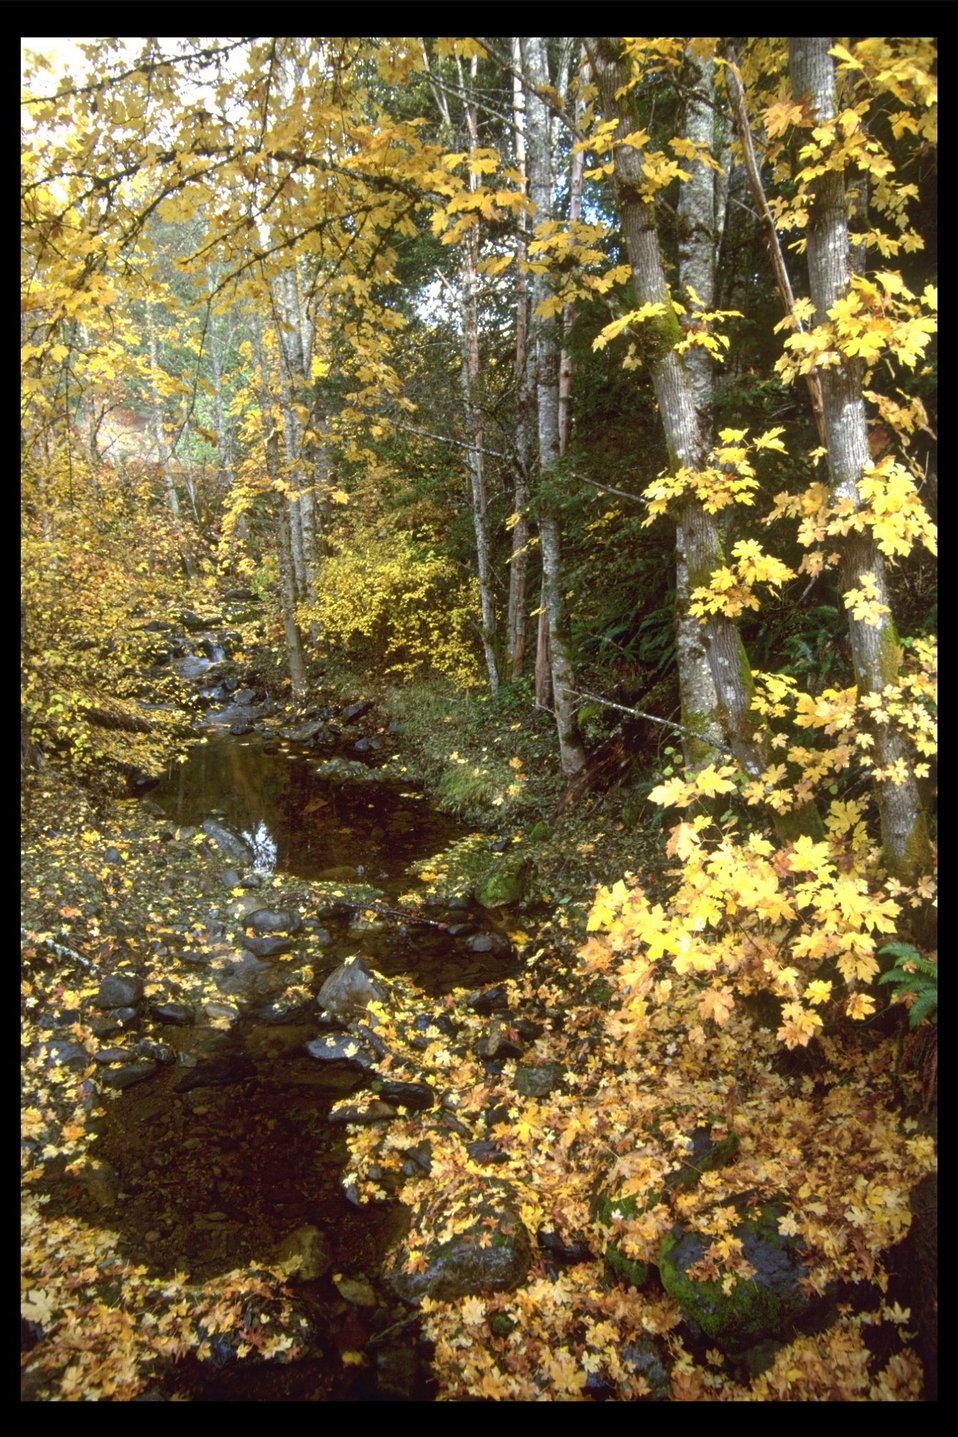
Pleasant Creek, east of Wimer.